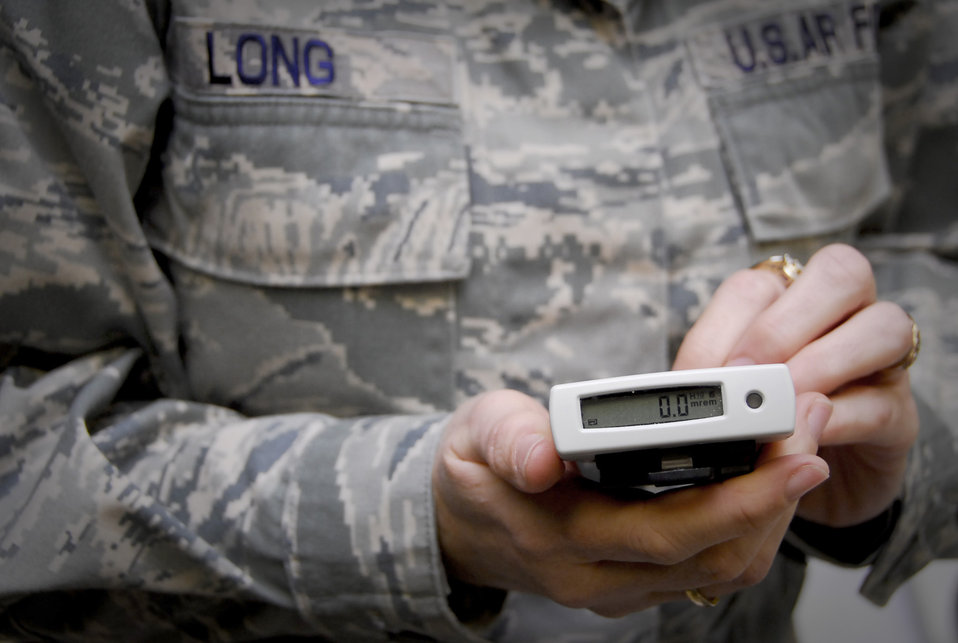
Bioenvironmental techs test for toxins near Tokyo

Tech. Sgt. Joanie Long holds an electronic personal dosimeter March 15, 2011, at Kadena Air Base, Japan. The dosimeter is one of the many pieces of equipment Airmen from the 18th Aeromedicine Squadron took to mainland Japan in support of disaster relief efforts. Sergeant Long is the readiness NCO in charge at the 18th AMDS Bioenvironmental Engineering Flight.